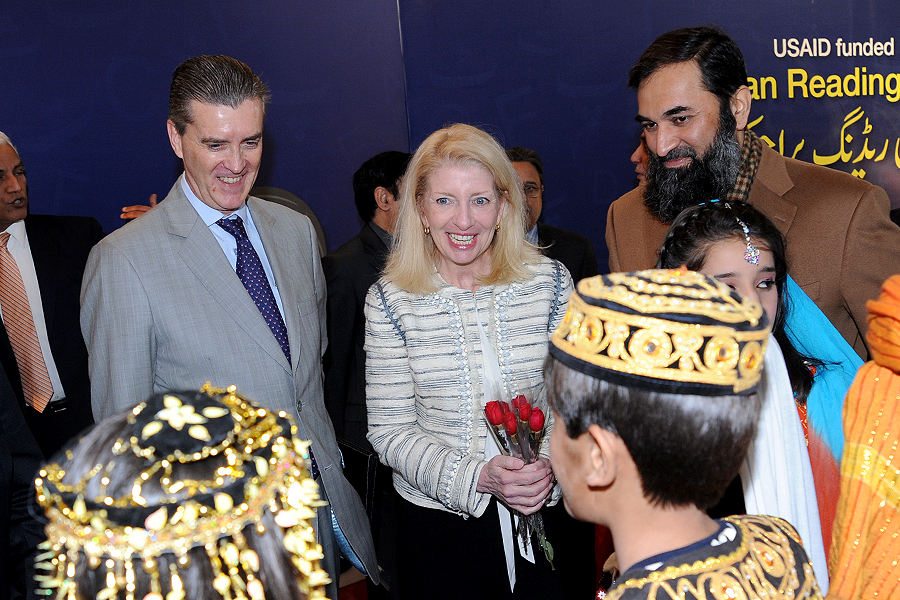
United States and Pakistan Launch the Pakistan Reading Project